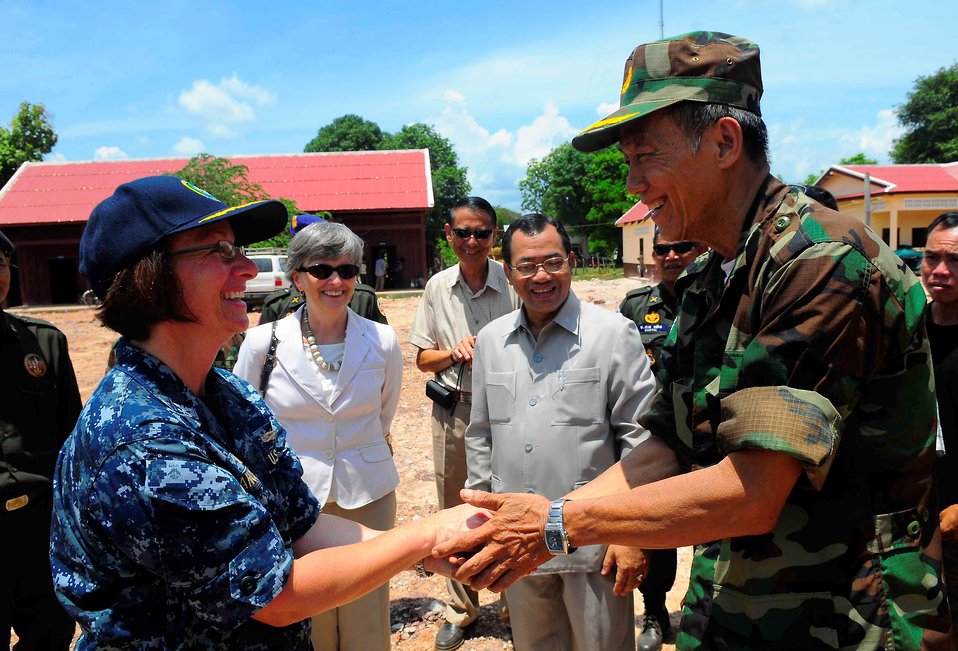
PP2010 Commander, Capt. Franchetti Recognize a Cambodian Medical Professional

The commander of Pacific Partnership 2010, Capt. Lisa M. Franchetti, recognizes a host nation Cambodian medical professional with a Pacific Partnership 2010 mission coin for his contributions at a medical civic action program at Rattanakiri, Cambodia, in support of the multinational humanitarian mission on June 18, 2010.